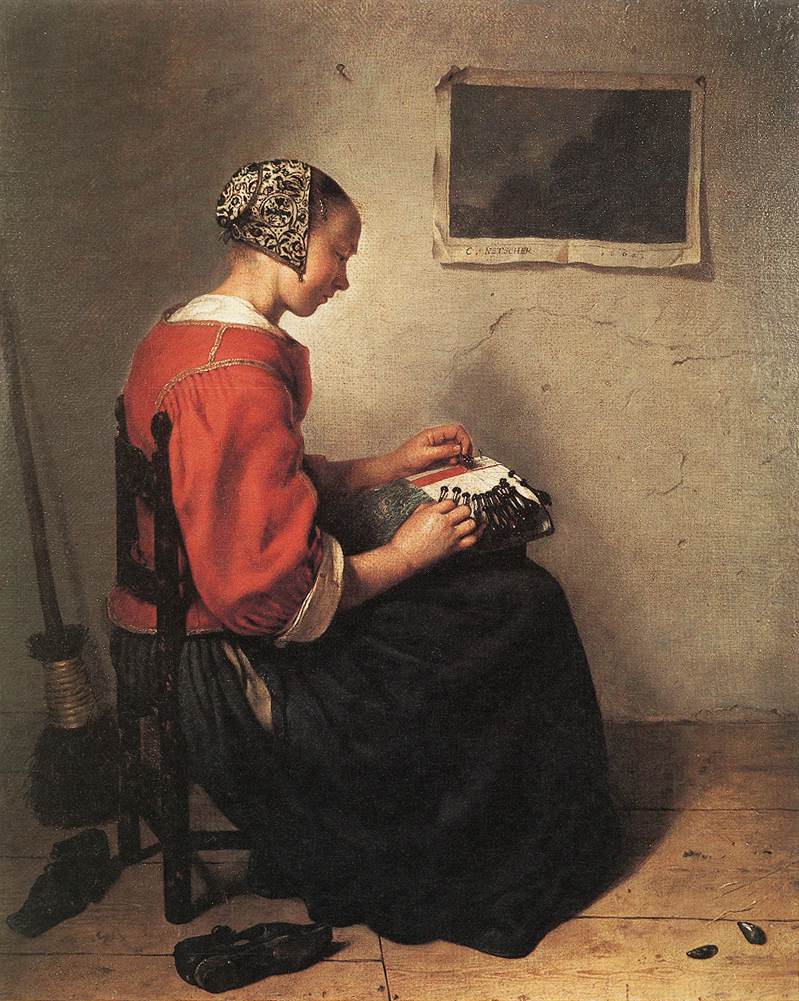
'The Lace-Maker' by Caspar Netscher